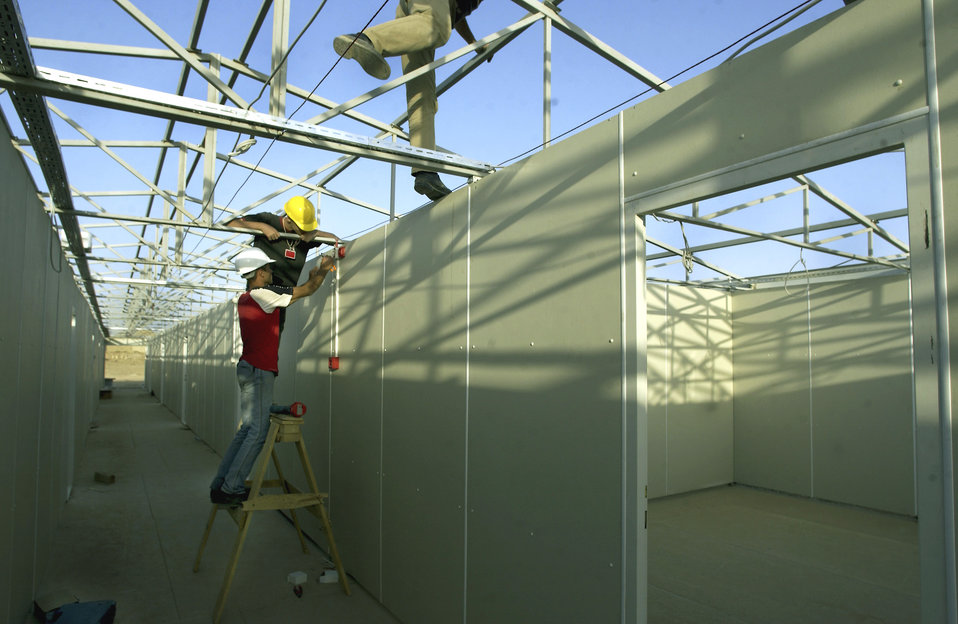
New dorms for airmen

KIRKUK AIR BASE, Iraq -- Contractors install fire alarms into new dormitories which are scheduled to open Dec. 1. The buildings will house up to 1,664 airmen in 13 buildings with six to eight people per room. The construction crews are averaging two buildings completed every three days since they began Sept. 23.